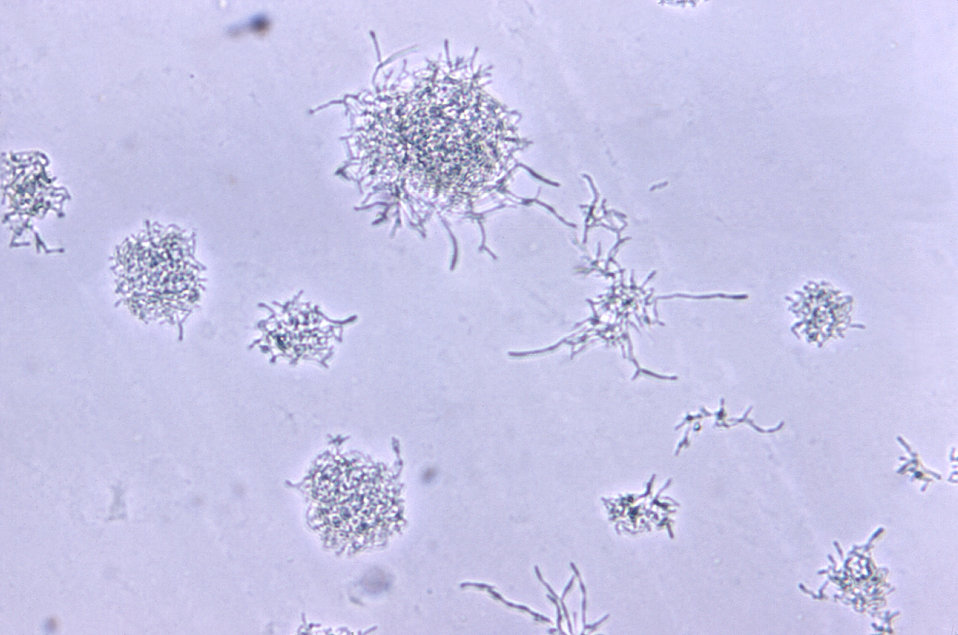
Cultivated for 18hrs on medium of brain heart infusion (BHI) agar, under a magnification of 380X, this photomicrograph revealed some of the ultrastructural morphology displayed by a number of Gram-positive Actinomyces sp. bacterial microcolonies. This was Strain W1250, which exhibited the rough type of colonial morphology.